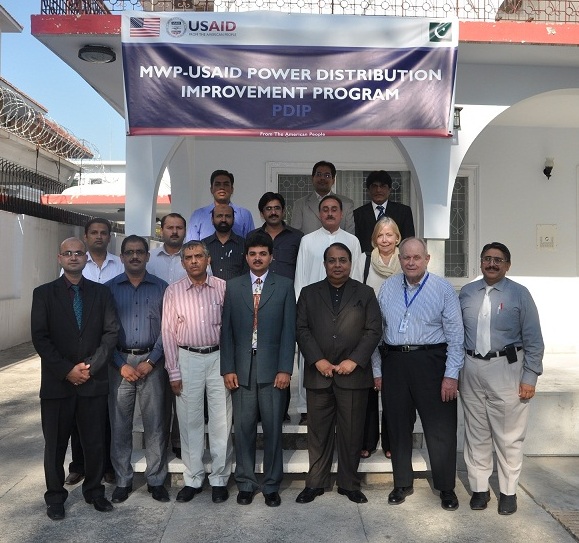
23 Sept, 2011 - Comm Workshop Capacity Building of DISCOs' Employees on Communications and PR Tools - Group Photo

A 2-day Communications and Outreach workshop was held with the PR and Customer Services department officials of the 9 DISCOs on September 23rd, 20II. The workshop aimed at capacity building of DISCO employees on use of Communications and PR tools to improve outreach and project a positive and brand conscious image of the DISCOs to their consumers and media.